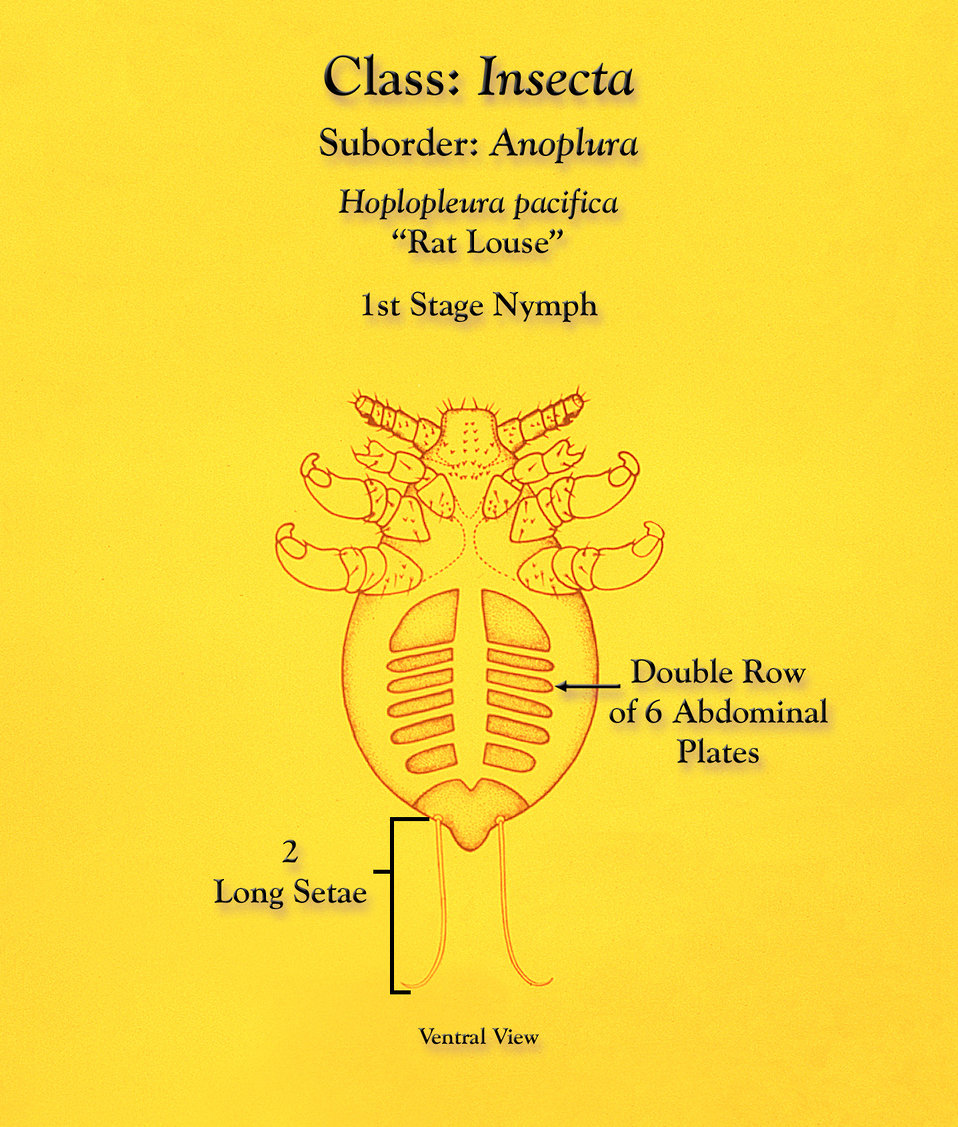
This illustration depicts the morphologic characteristics found to be displayed by the Anopleural sucking 'tropical rat louse', Hoplopleura pacifica during its first nymphal stage.